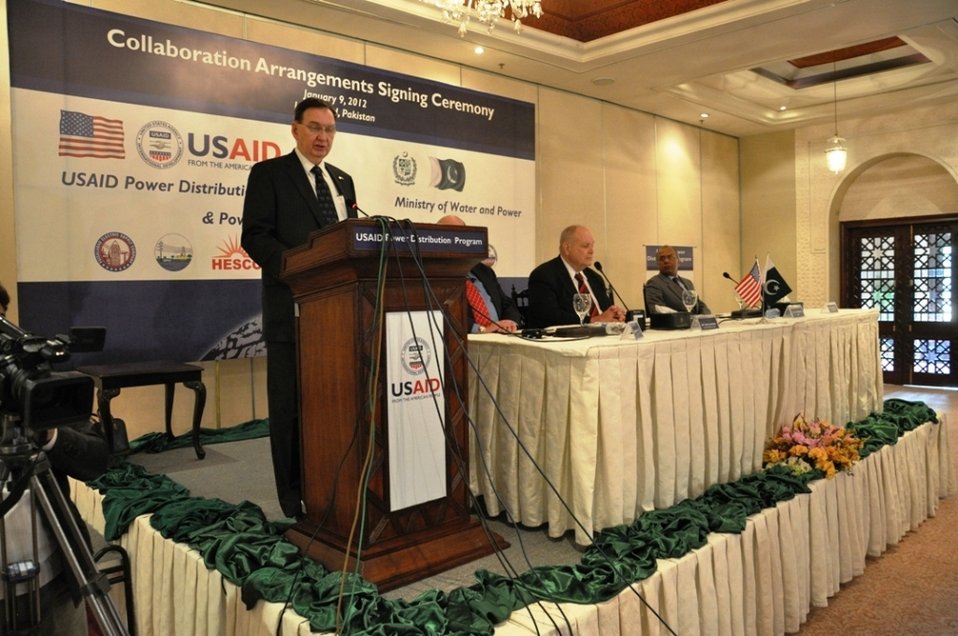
Collaboration Arrangement Signing Ceremony

Islamabad, January 9, 2012 - Mr. John Morgan, Program Officer, USAID addressing the attendees and media highlighting the significance of USAID Power Distribution Program for bringing improvements in the Power Sector of Pakistan.